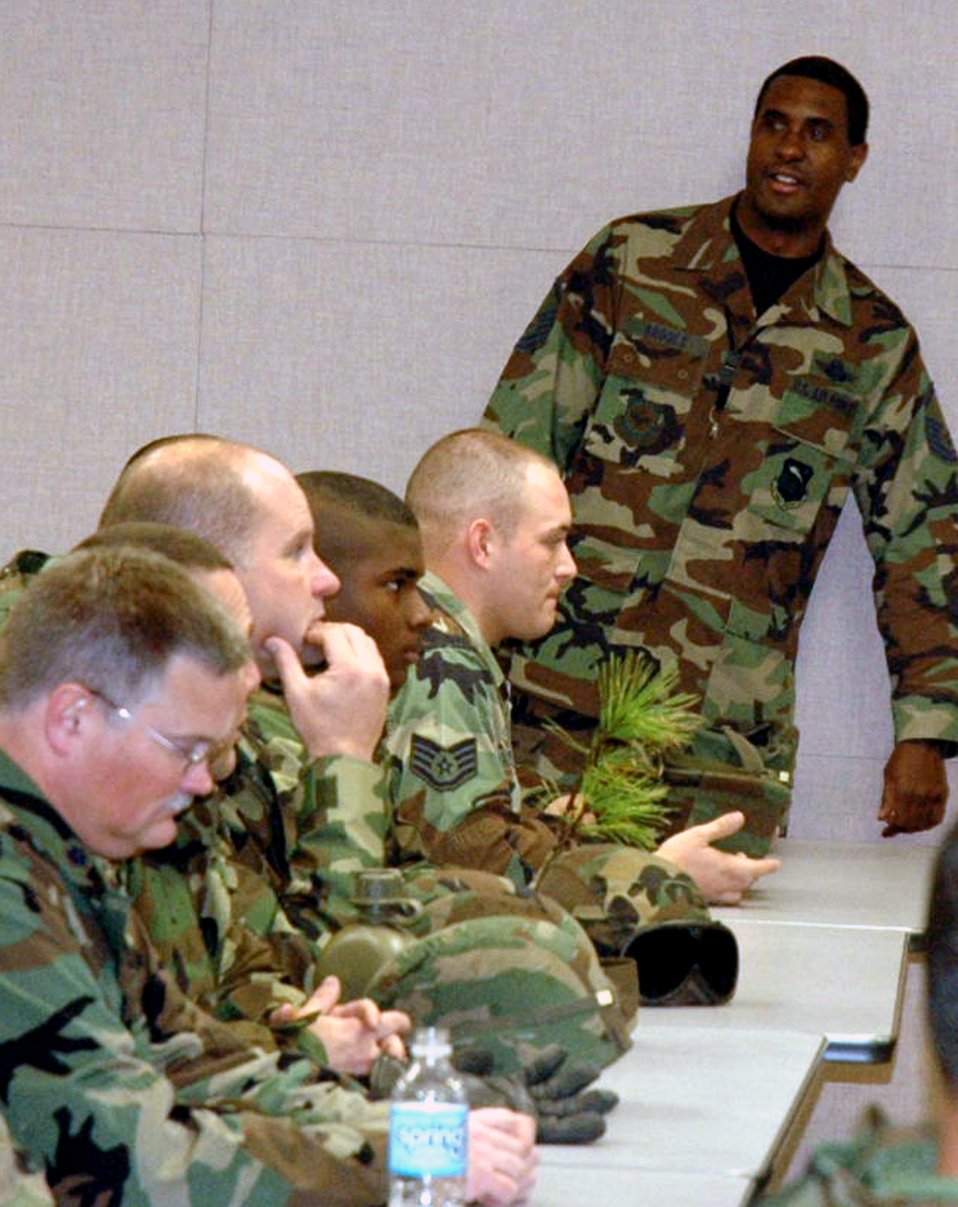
First Air National Guard contingency response group trains

Master Sgt. John Brooks teaches a class on night vision operations using night vision goggles Nov. 15 at the Air Force Expeditionary Center's Mobility Operations School at Fort Dix, N.J. Both basic and advanaced Contingency Response Group Formal Training Unit courses are taught at the center. The courses are each 22 days long and include 10 days of training at the Advanced Contingency Skills Training Course taught by the Center's Expeditionary Operations School. Sergeant Brooks is an instructor at the school.